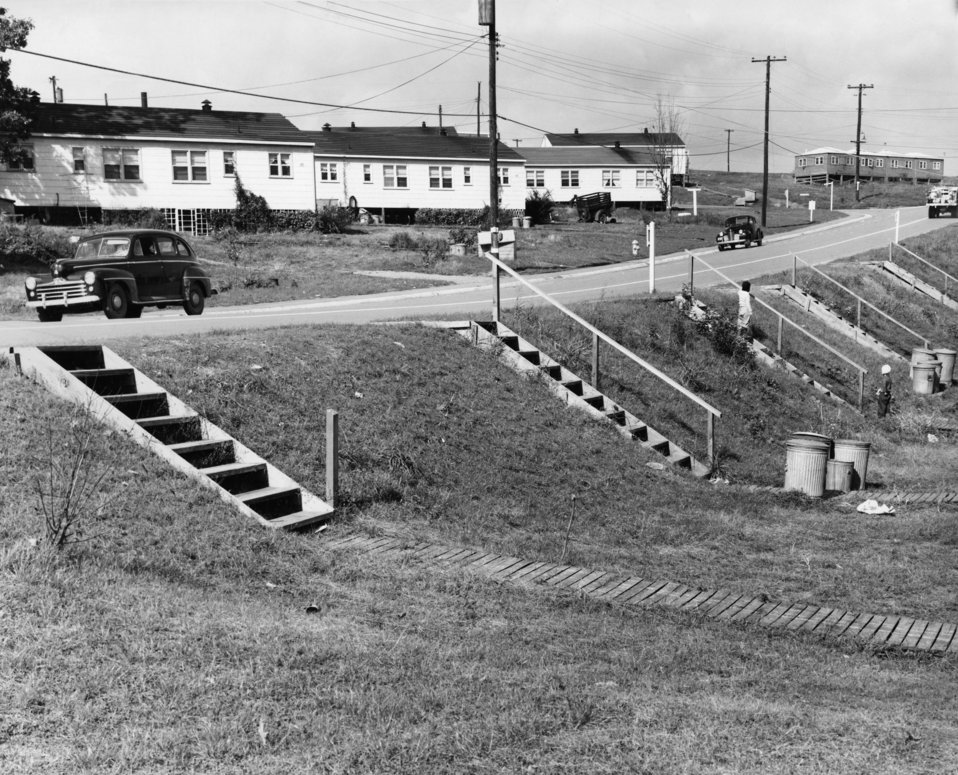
Wooden steps and boardwalk Hillside Ave. 1947 Oak Ridge

3879-1 DOE photo Ed Westcott 11-5-1947 Oak Ridge Tennessee